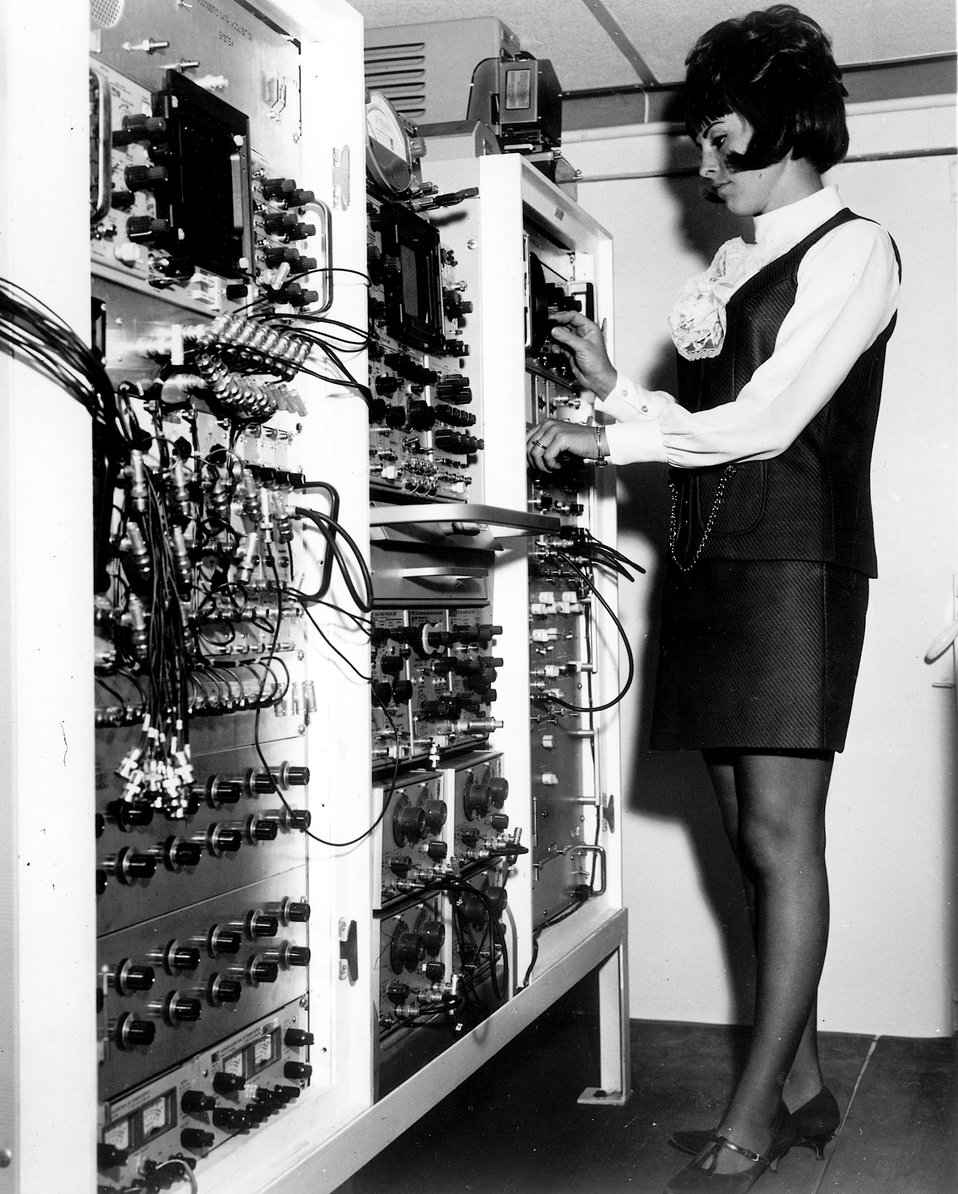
National Reactor Testing Station, Idaho... Detection of microscopic flaws in materials is provided by electronic equipment in the Mobile Acoustic Analysis Laboratory developed in 1969 at the National Reactor Testing Station in Idaho. Circa 1970.